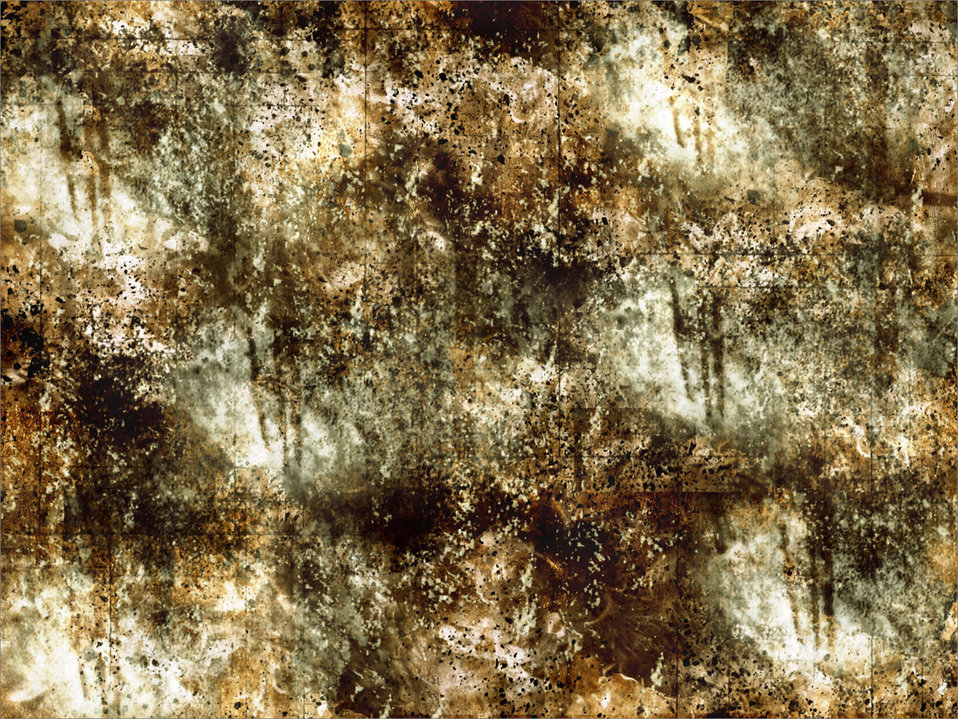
Grunge

Dark grunge background..